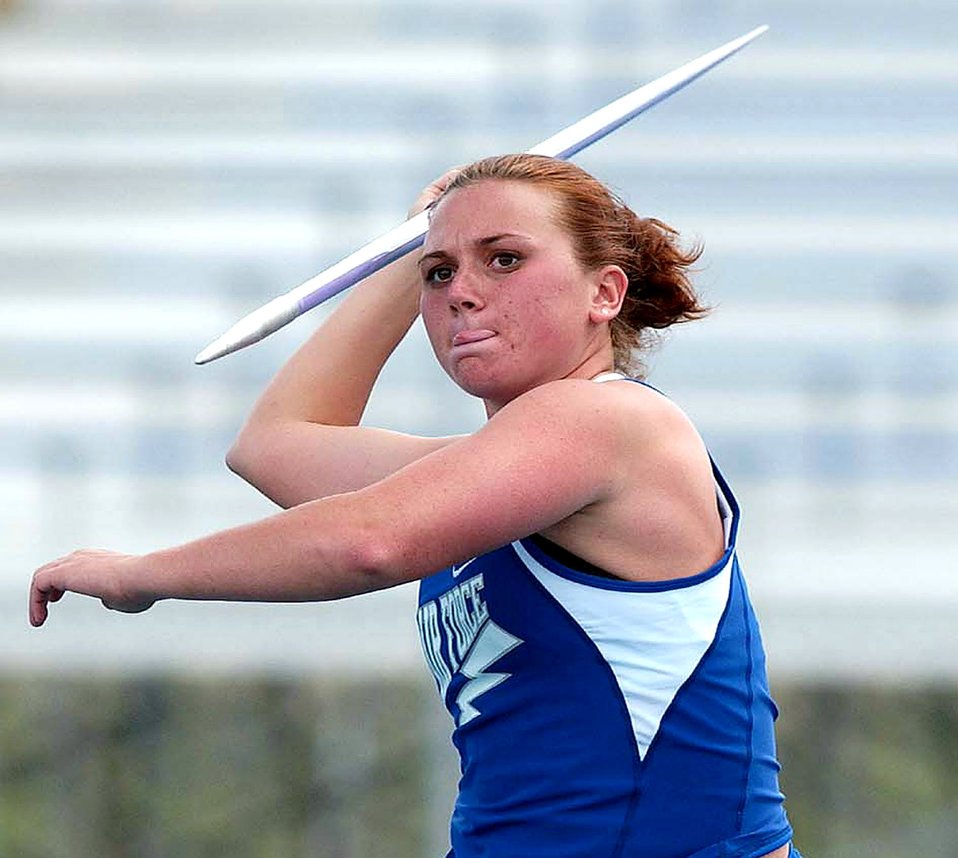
Pounds wins second NCAA javelin title

Dana Pounds successfully defended her javelin title at the NCAA Track and Field Championships in Sacramento, Calif., on June 9. Defeating the runner-up by nearly 12 feet, the Lexington, Ky., native claimed her second national title in as many years.